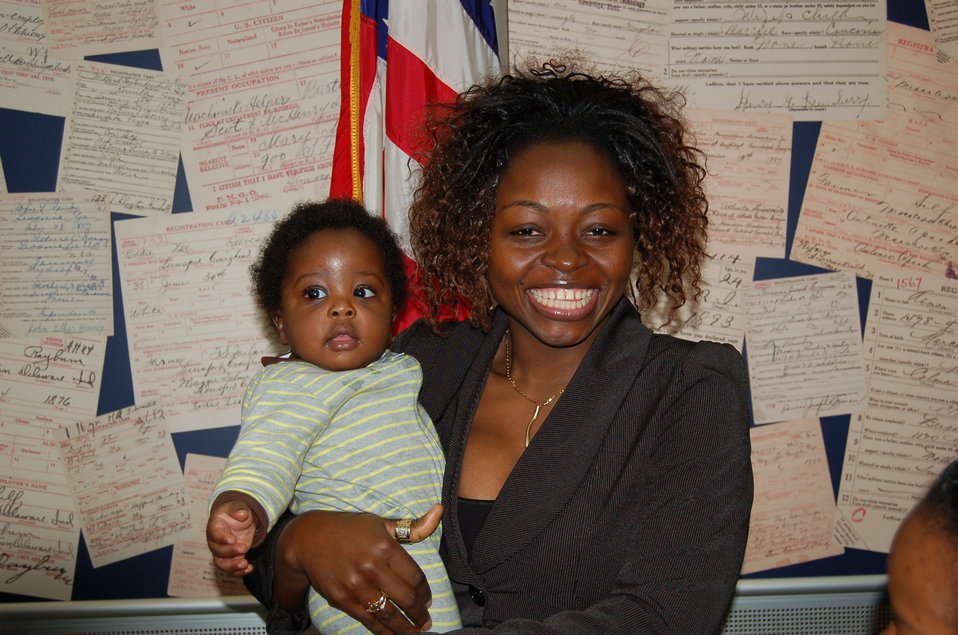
New Citizens